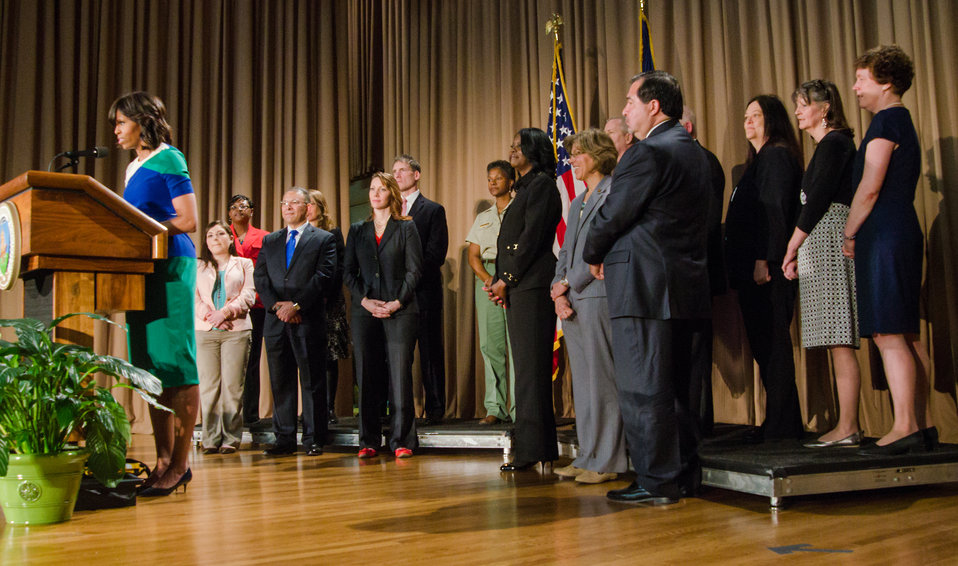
First Lady Michelle Obama thanks U.S. Department of Agriculture (USDA) employees for their service and dedication at the Jefferson Auditorium, USDA on Friday, May 3, 2013. The First Lady reminded federal workers of the importance of the work they do to support American farmers and ranchers, protecting the environment, lifting up rural communities, and keeping food safe, and working to end hunger.